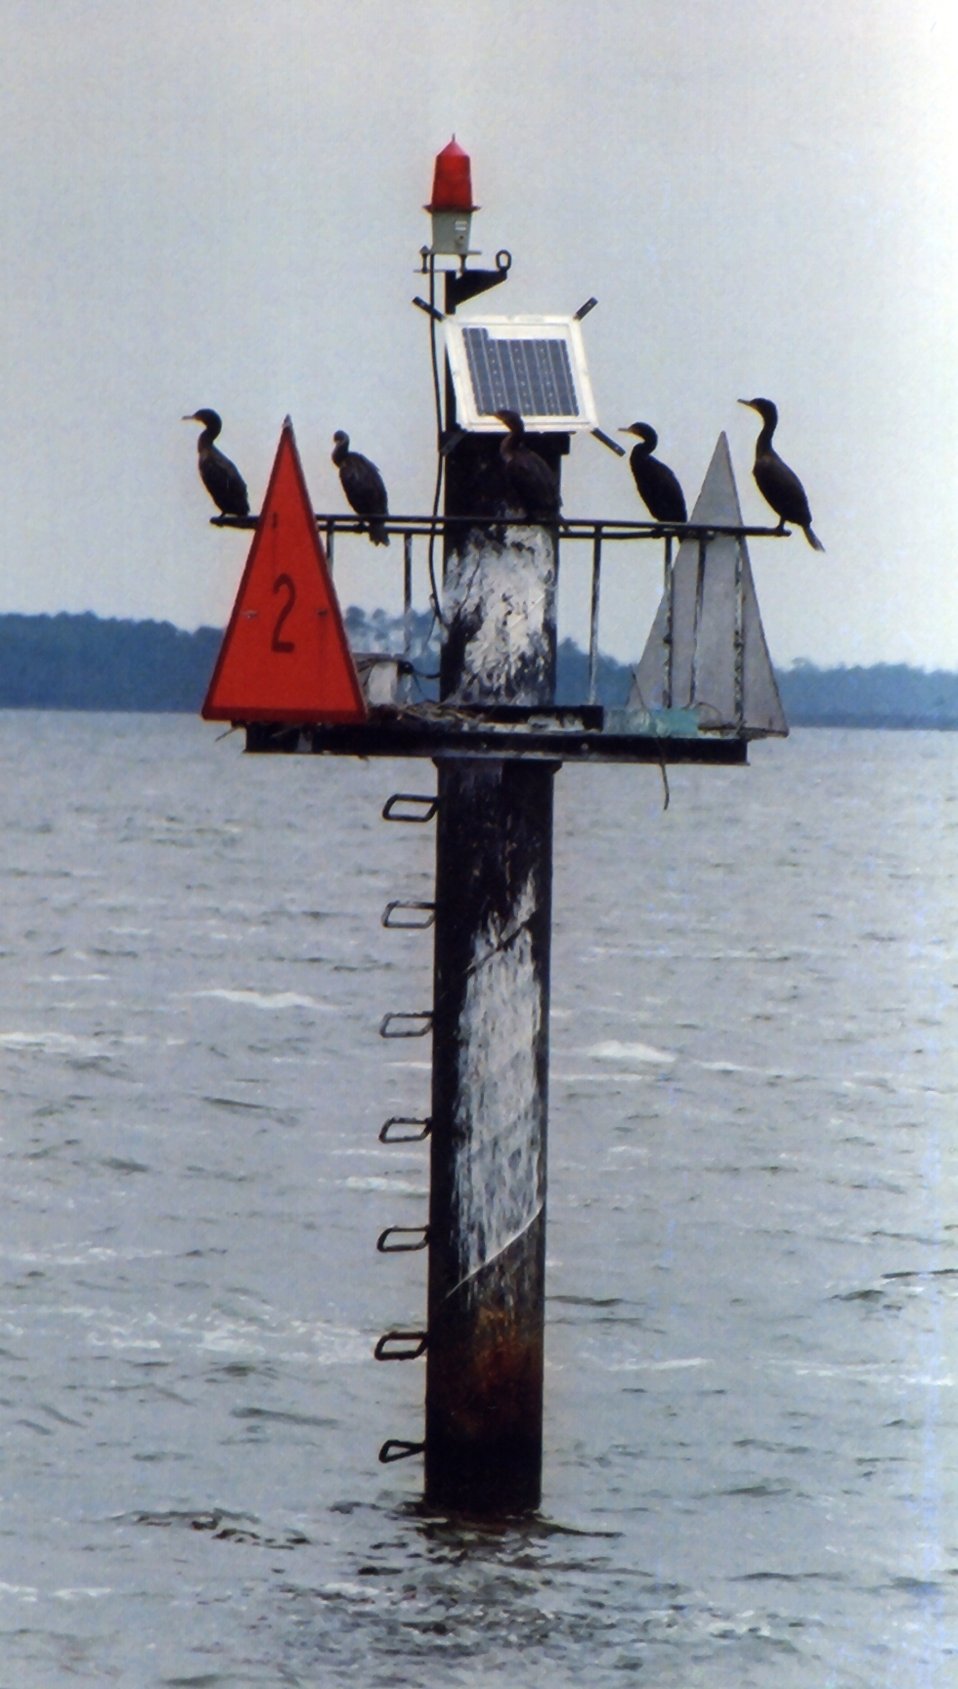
Cormorants on a channel marker.